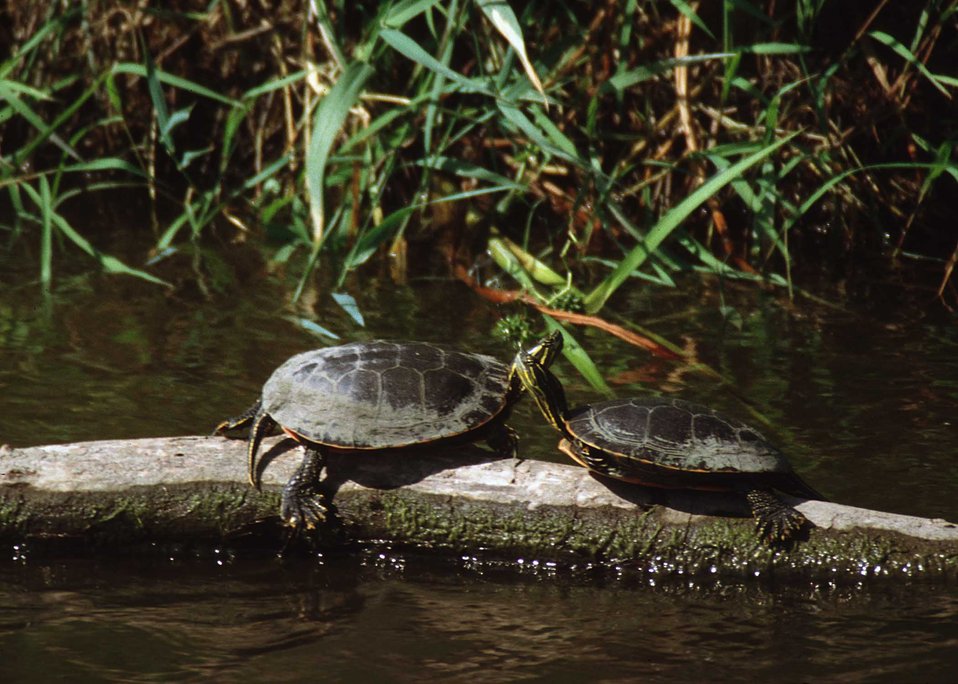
Turtles on a log.